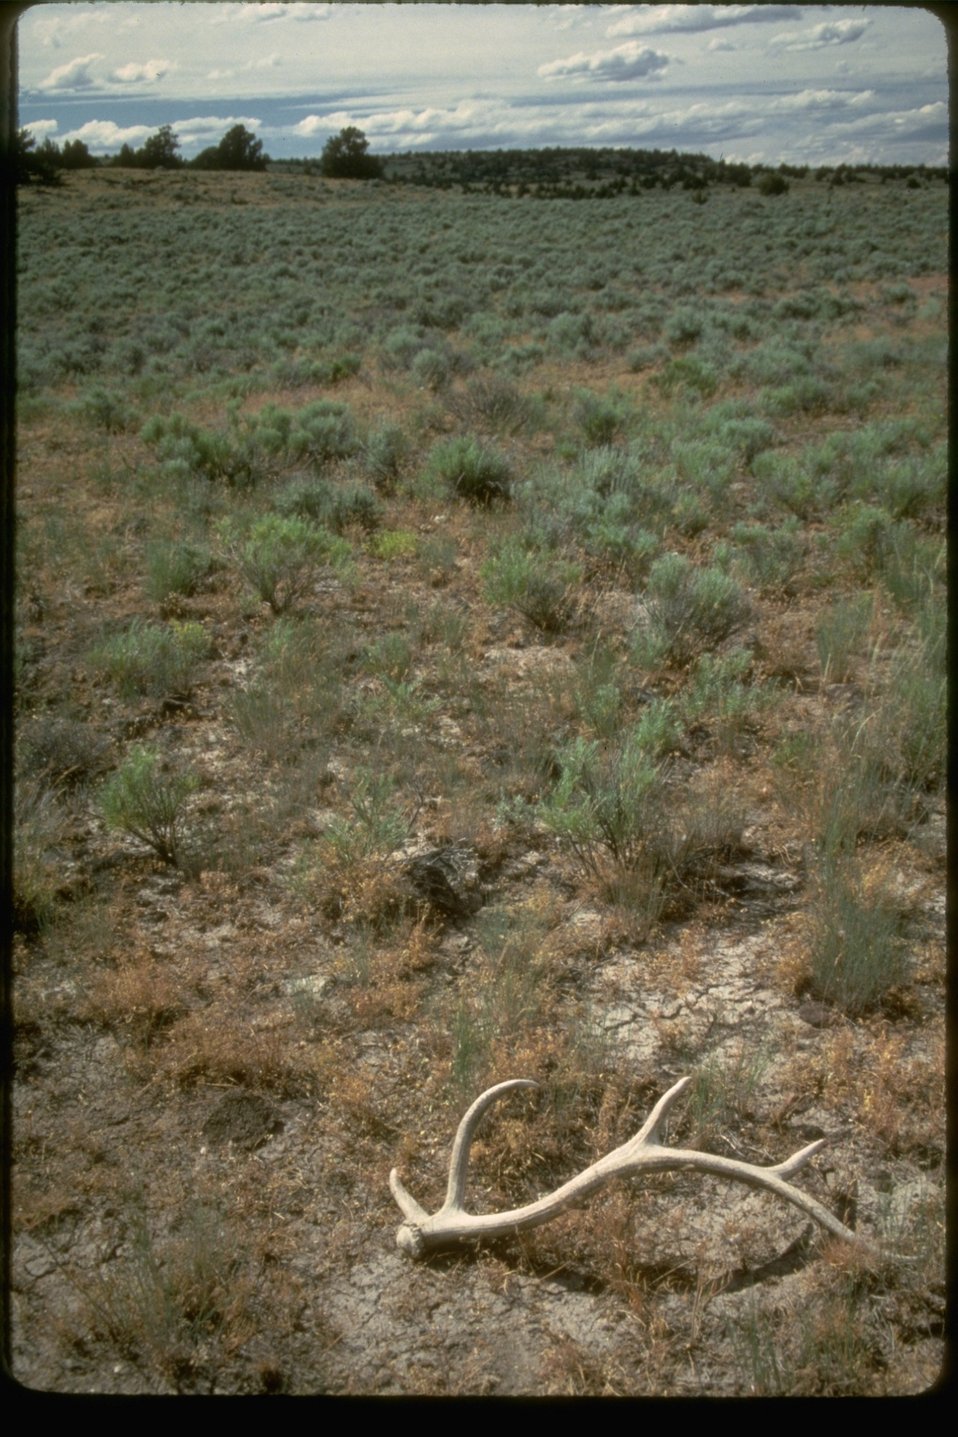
Deer antler in prairie grass.